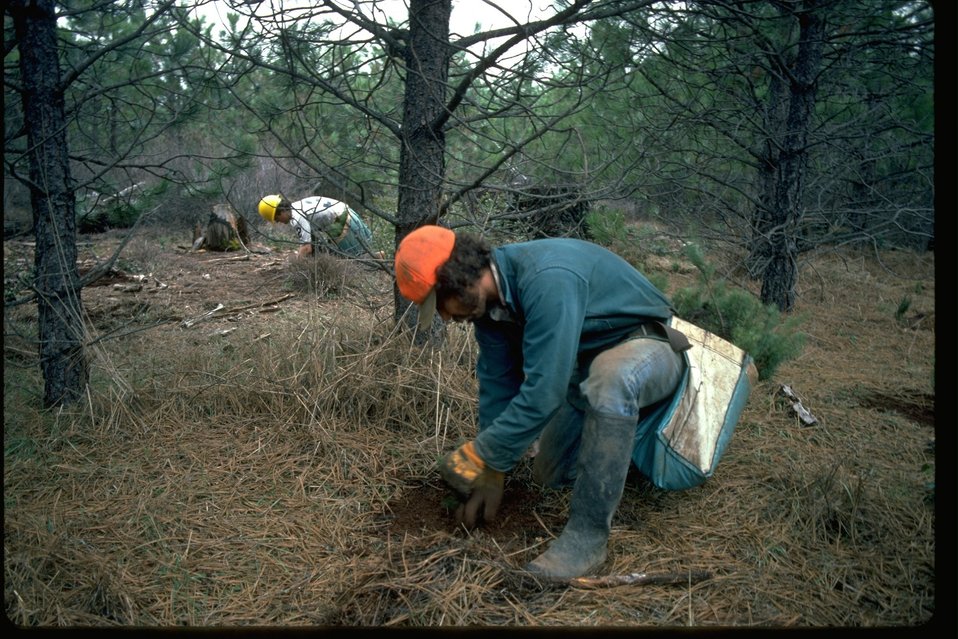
Foresters planting trees.